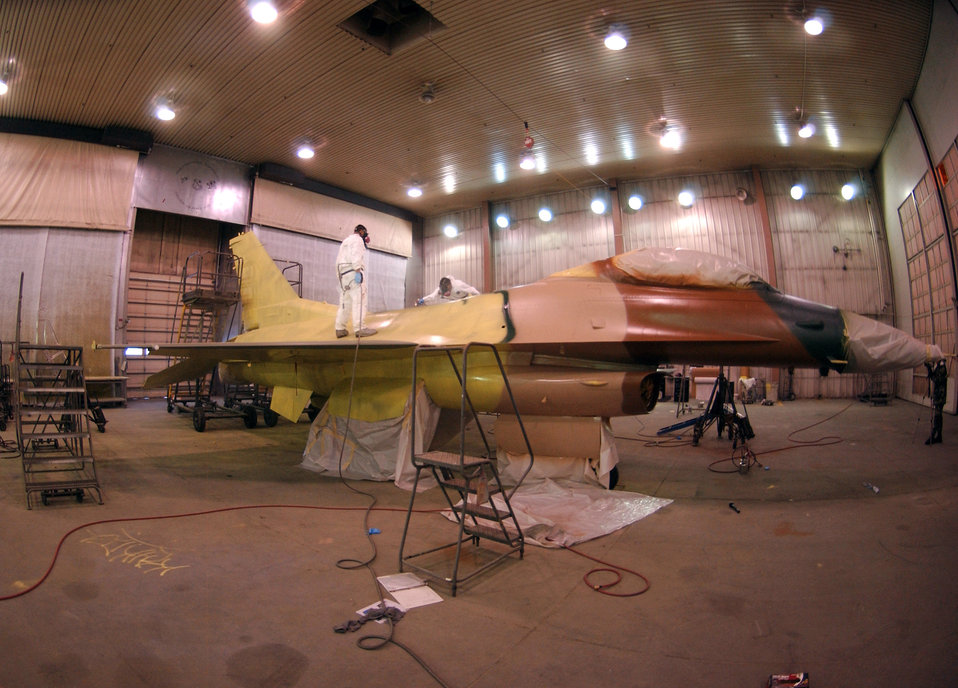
Fresh Coat For New Beginning

Senior Airman Frank Reardon and Airman 1st Class Eric Rickards apply a jungle theme to an F-16 Fighting Falcon Feb. 14 at the corrosion facility. With the swap of the F-16s from Kunsan Air Base, South Korea, to Eielson AFB in support of their new mission as aggressors, each aircraft is applied with a scheme being Arctic Flanker, Blue Flanker or a Lizard Flanker. Airmen Reardon and Rickards are 354th Maintenance Squadron sheet metal workers.